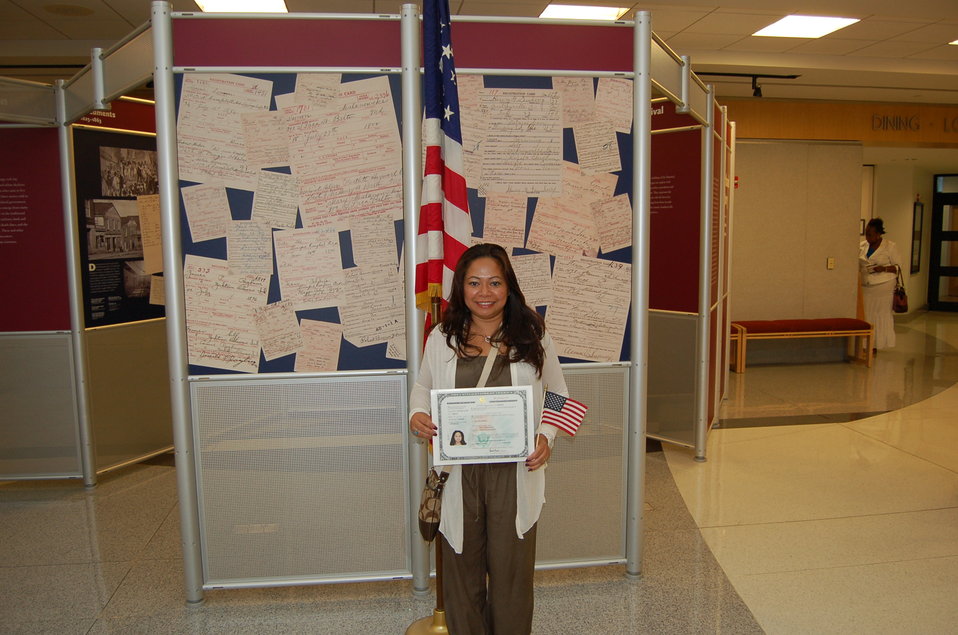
New Citizens